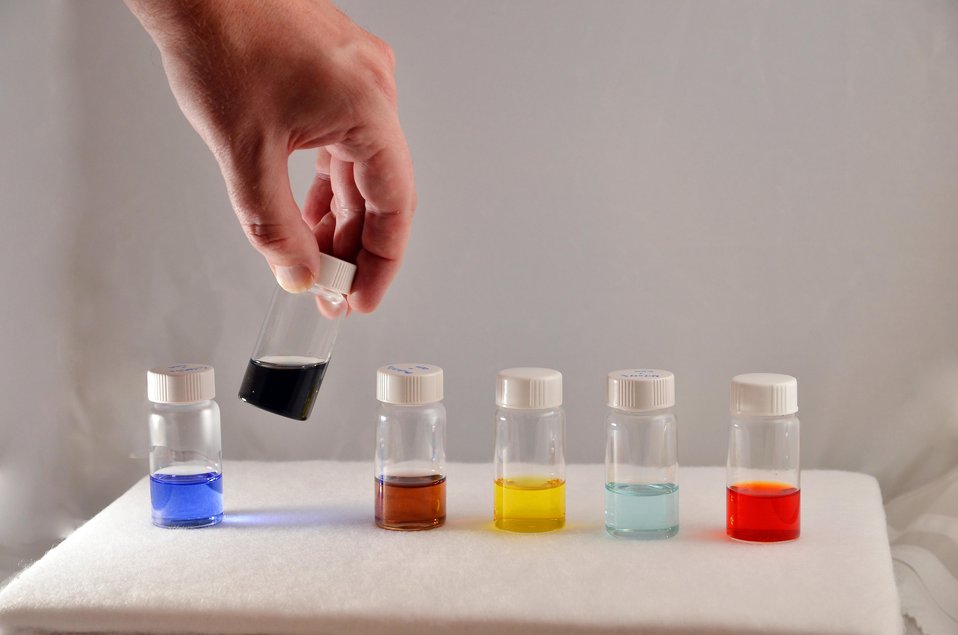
Scientists at Sandia National Laboratory have discovered a new family of liquid salt electrolytes that could lead to batteries with three times greater energy density than other available storage technologies.
Shown are the MetILs are, from left to right: copper-based compound, cobalt-based compound, manganese-based compound, iron-based compound, nickel-based compound, and vanadium-based compound.